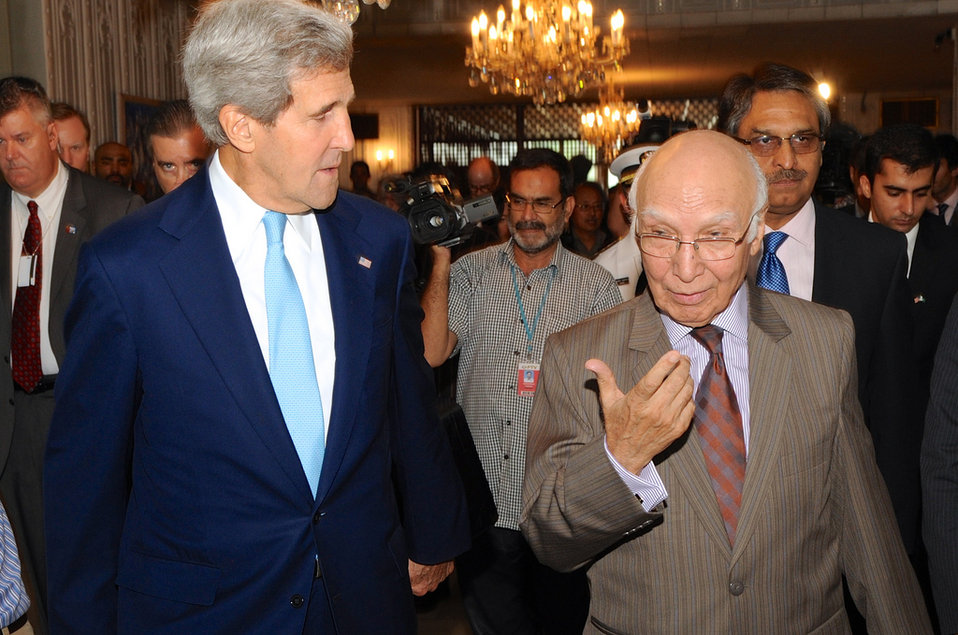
Secretary Kerry Meets With Pakistani Advisor Aziz

U.S. Secretary of State John Kerry walks with Pakistani Foreign Affairs Advisor Sartaj Aziz before their meeting in Islamabad, Pakistan, on August 1, 2013.